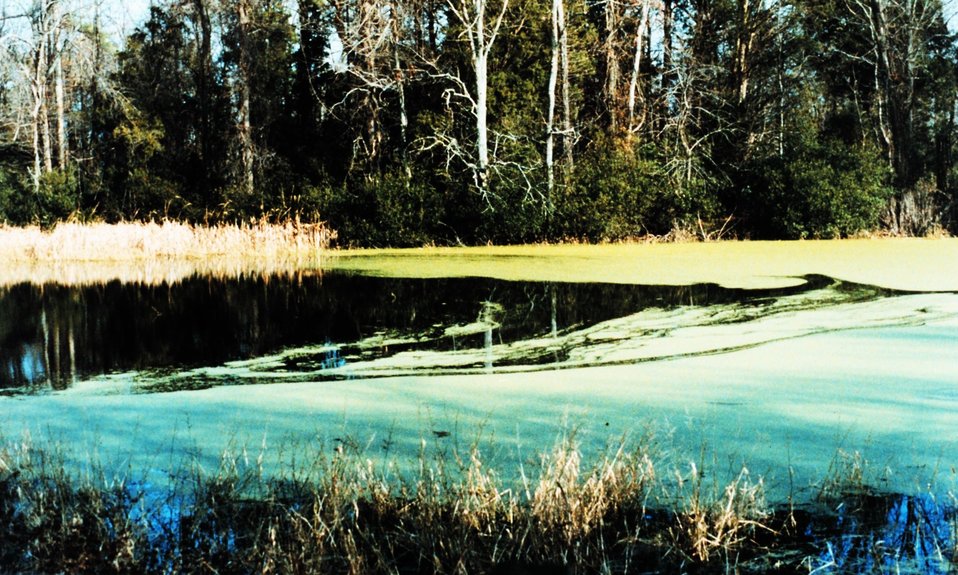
Flag Pond covered with green algae.